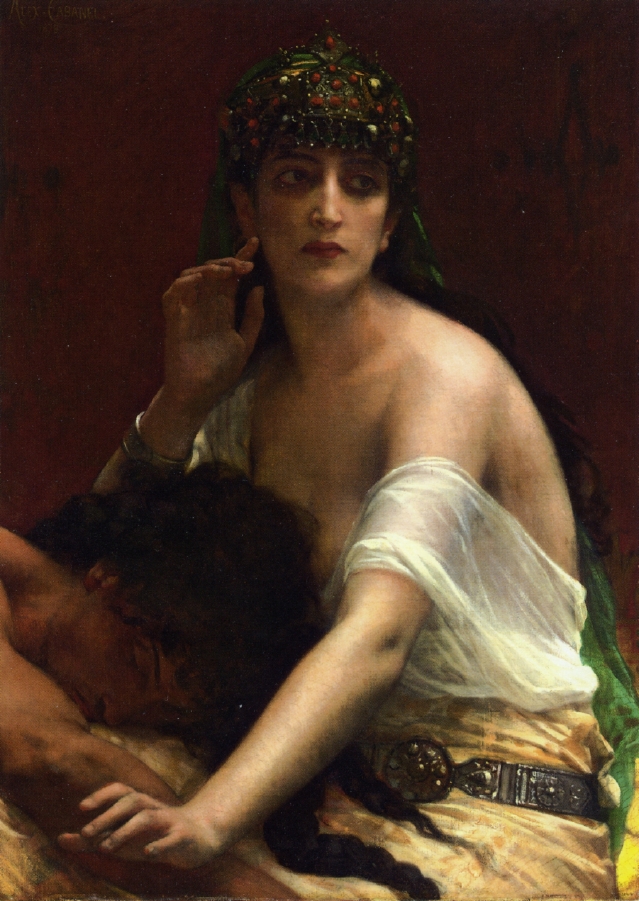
Alexandre Cabanel - Samson and Delilah